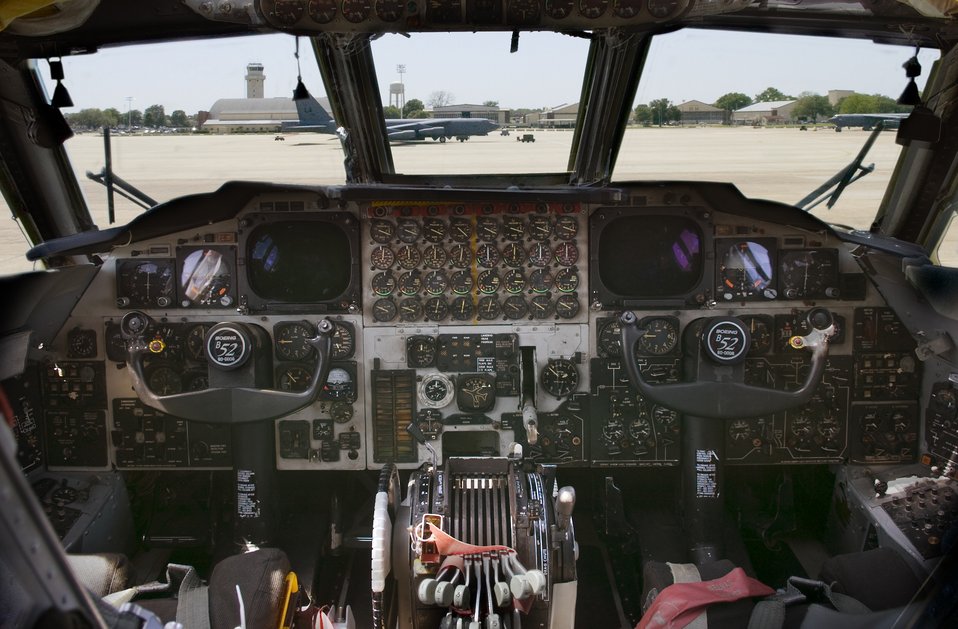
B-52 bomber and simulator

The view of the actual Barksdale Air Force Base, La., flightline from inside a B-52 Stratofortress taken April 29 can be closely matched by the new dome projection surface fitted on the B-52 simulator.